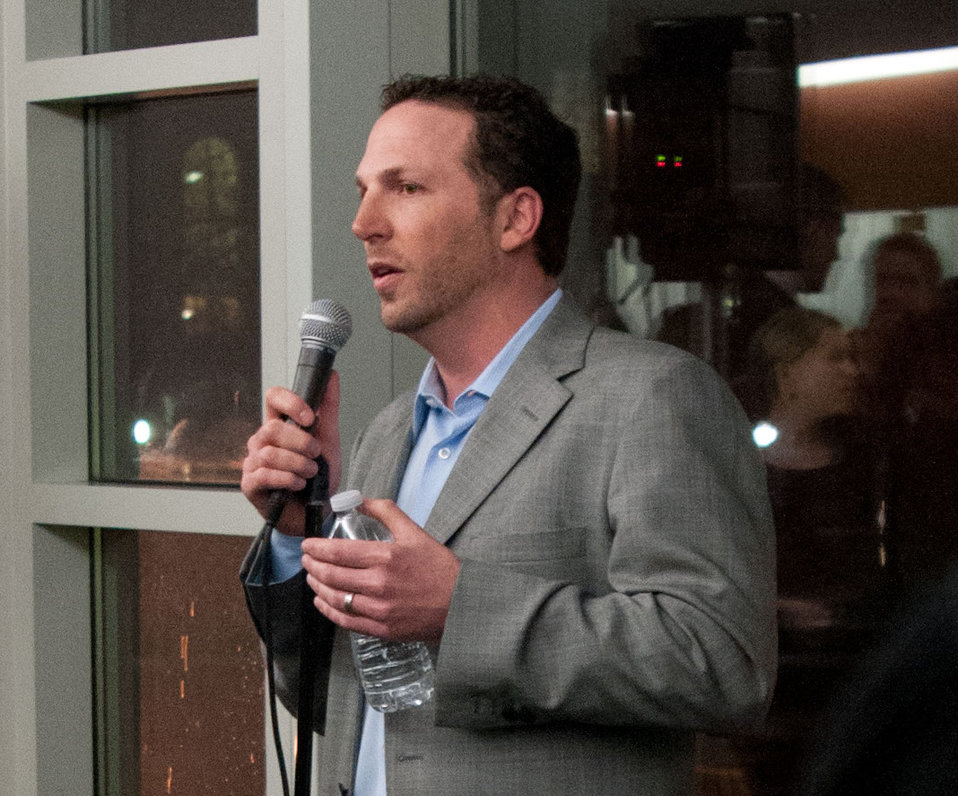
Restaurant Group Concept Developer and Managing Partner Dan Simons welcomes the participants of the “Shaping the Farm Bill for a Sustainable Future” Forum in the Jack Morton Auditorium, at the Trachtenberg School of Public Policy and Public Administration, on the George Washington University campus in Washington, D.C., on Thursday, March 1, 2012.